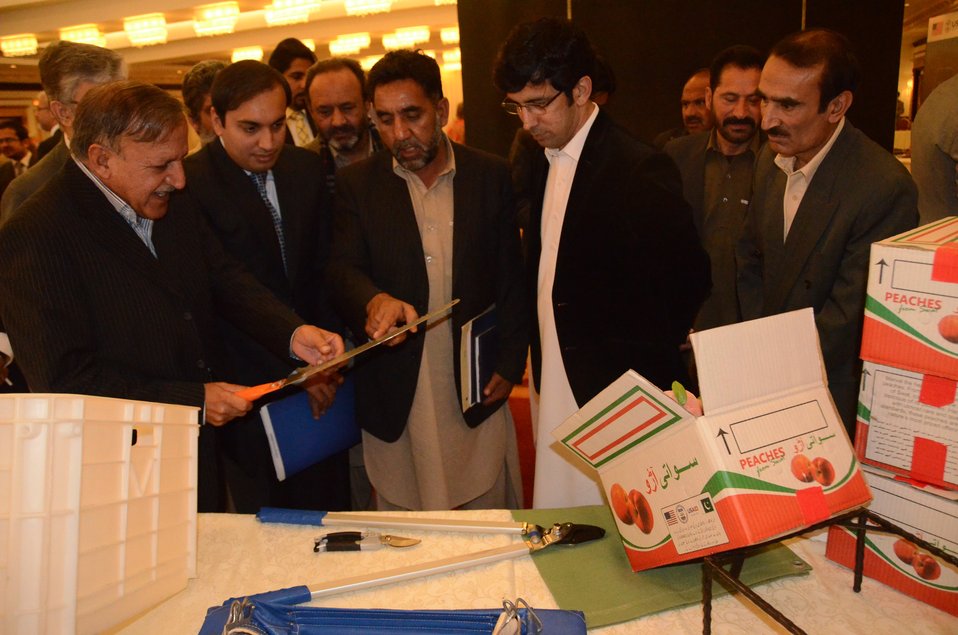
Shahram Khan Tarrakai Minister for Agriculture, Livestock and Cooperation KP being shown pruning tools by the peach farmers, distributed by USAID